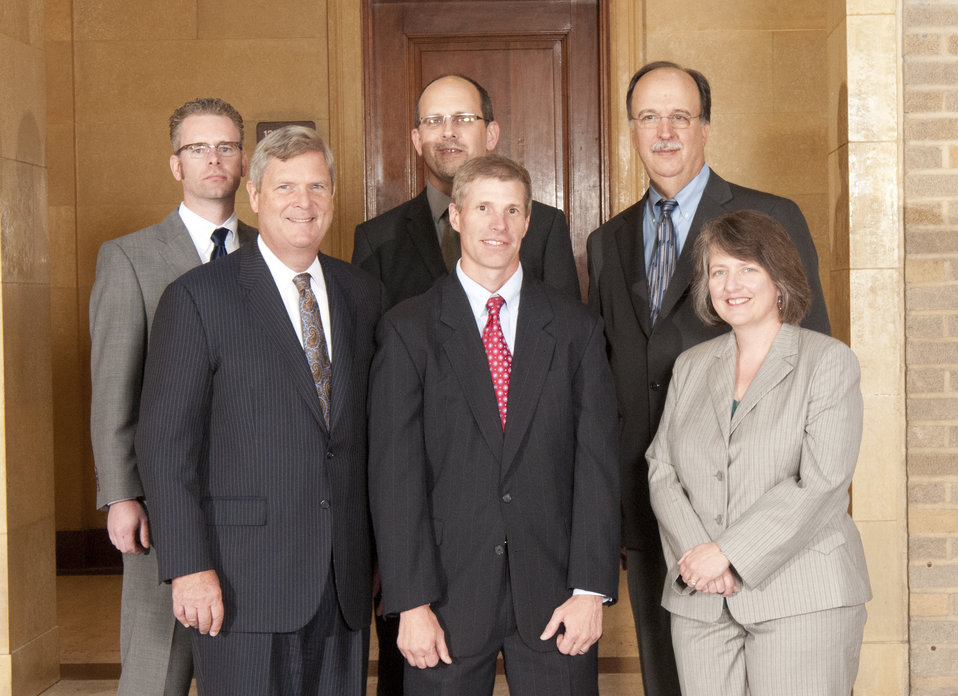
Agriculture Secretary Tom Vilsack and Deputy Agriculture Secretary Kathleen Merrigan with Honor Award Group Southern Pine Beetle Prevention Program, on the patio of the U.S. Department of Agriculture in Washington, D.C. on Wednesday, Sept. 12, 2012. The Southern Pine Beetle Prevention Program lead an “all lands approach” to improving the resiliency of more than one million acres of forests to southern pine beetle, fire, and other threats.